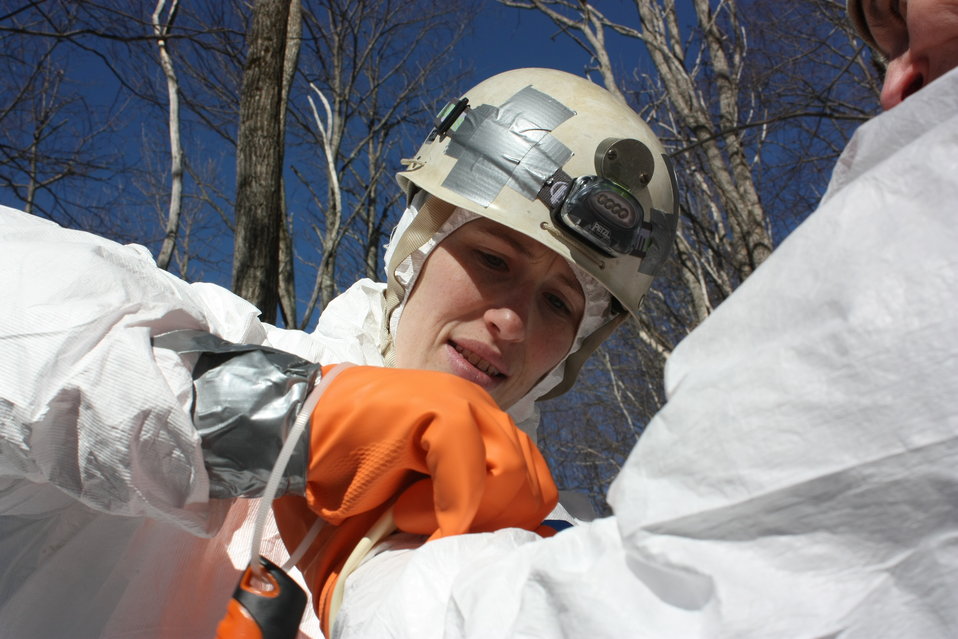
NCWRC biologist Cordie Diggins taping glove, preparing to enter NC mine for WNS survey